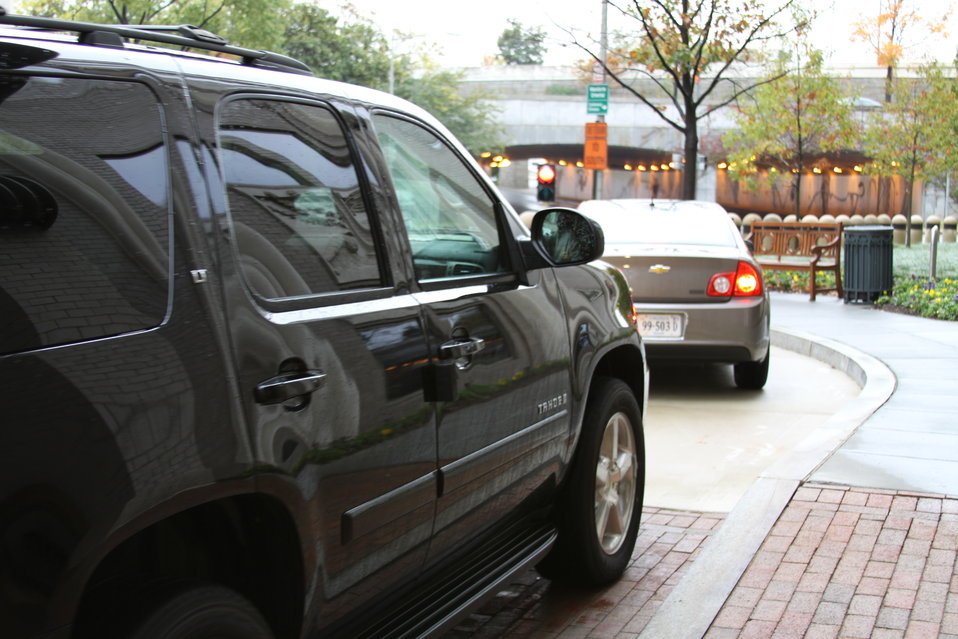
FCC Official Vehicle Tour